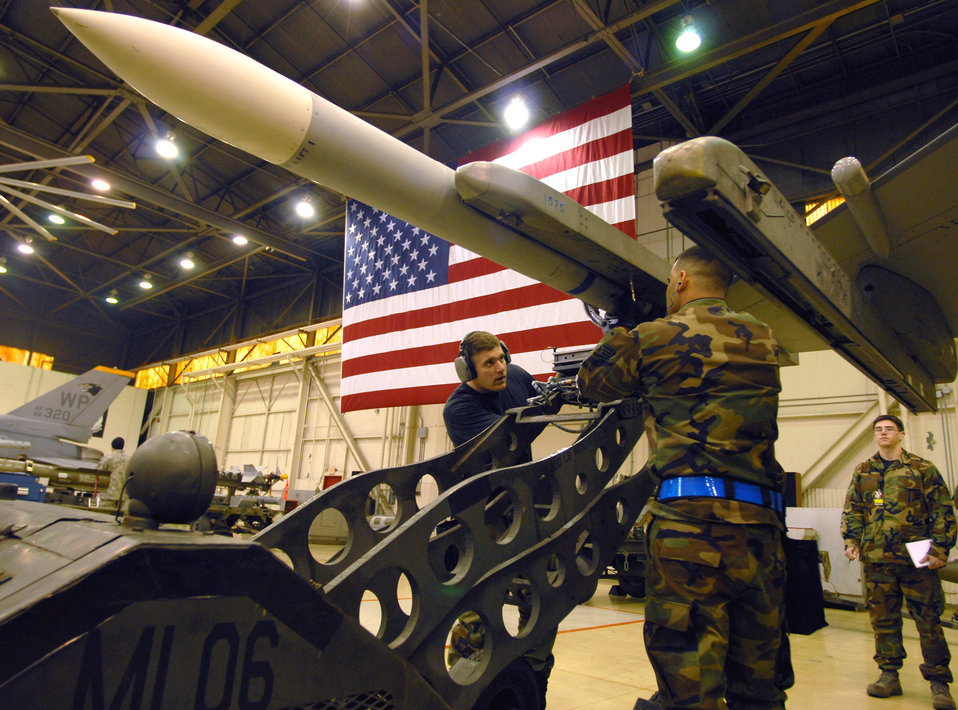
Loading with pride and speed

Senior Airman Jon Michael Schwartz (left) and Staff Sgt. Danny Colon secure a missile to an F-16 Fighting Falcon Dec. 14 during a weapons load competition at Kunsan Air Base, Korea, as Senior Airman Tyler Brown (rear) observes.